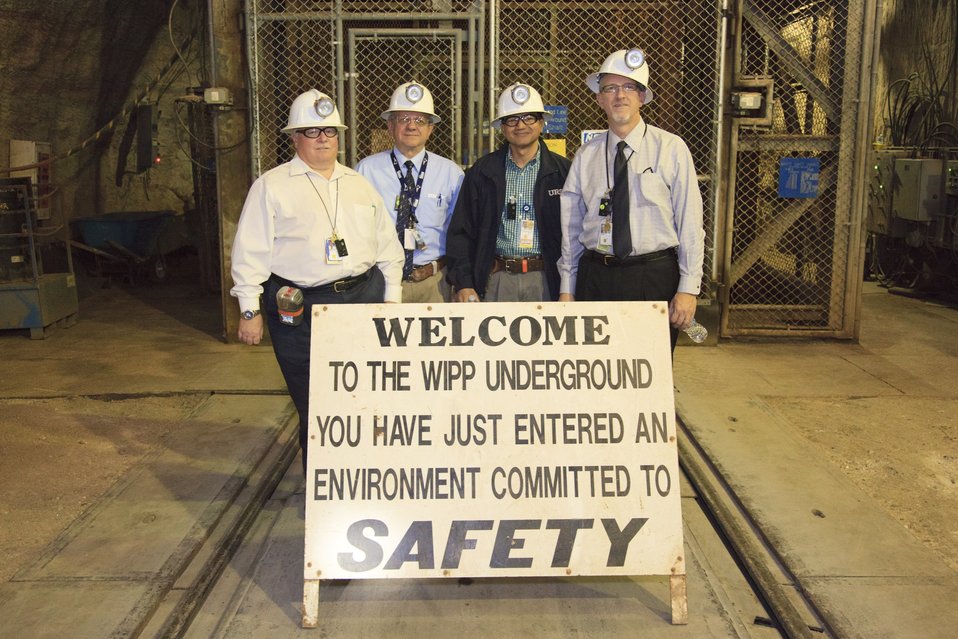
Los Alamos National Laboratory Celebrates 1000th Transuranic Waste Shipment